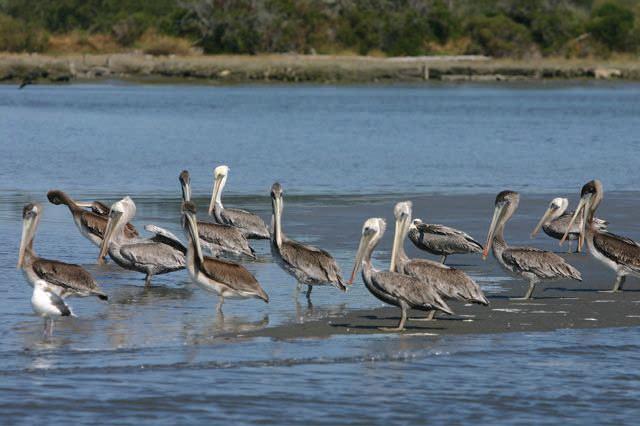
Pelicans on Humboldt Bay

S. Schlosser/USFWS